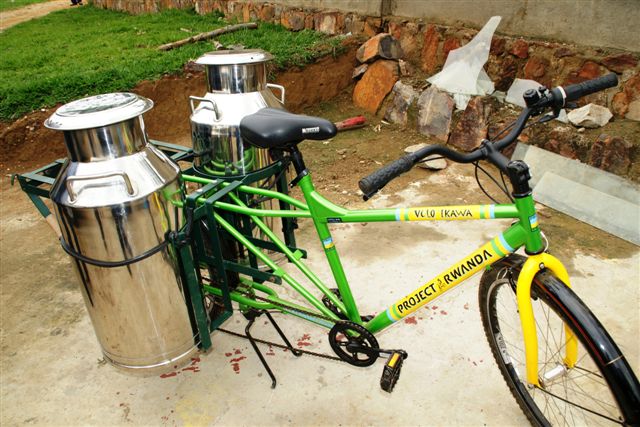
Deputy Secretary Neal Wolin’s trip to Africa 2009

Ready for transport… Photo courtesy of the American Embassy in Kigali.